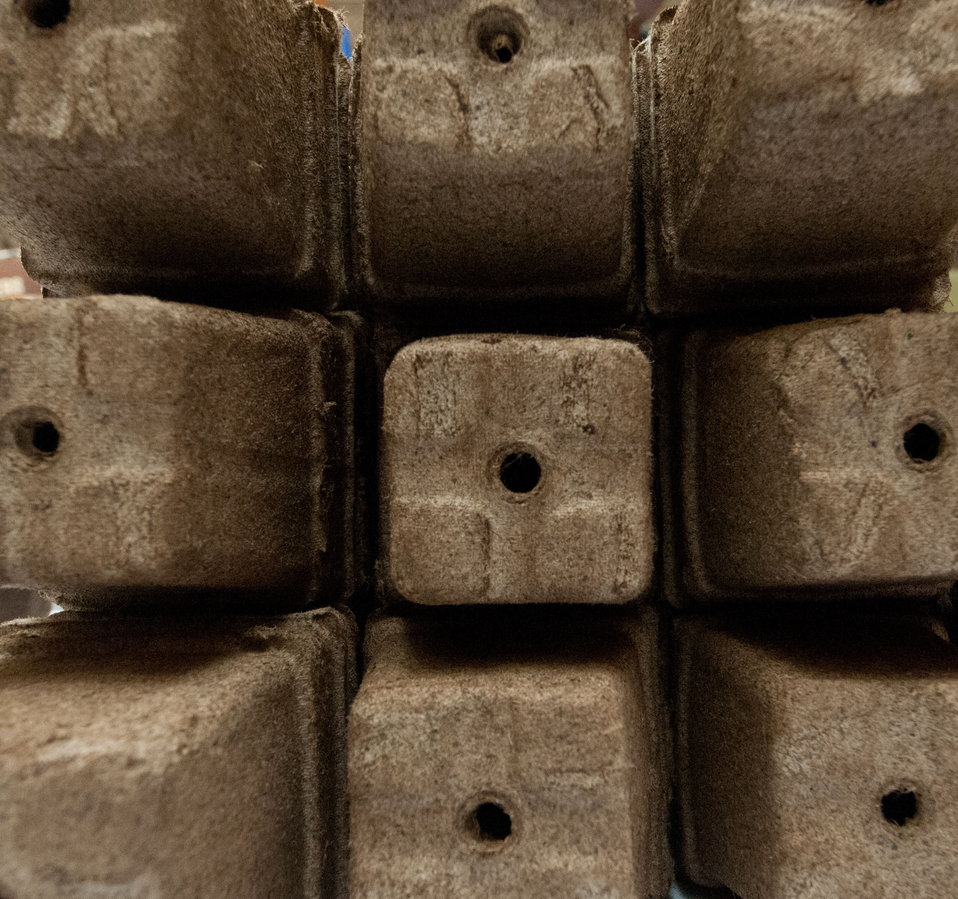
The People’s Garden Initiative and volunteer Executive Master Gardeners distributed ‘Abraham Lincoln” Tomato seedlings that the People’s Garden Initiative is distributing to USDA employees in celebration of the 150th Anniversary of the U.S. Department of Agriculture, on Tuesday, May 15, 2012 in Washington, D.C., on this day, 150 years ago, President Abraham signed the Department into existence during the Civil War. the bottom of cow manure-fiber based seed starter pots (are seen here), and all weeds, pathogens and odor are removed, and planted with the seedling. The roots will grow through the sides as it degrades and releases nitrogen into the soil, helping the plant. In 1923 the H.W. Buckbee seed company of Rockford, Illinois introduced an heirloom variety named in honor of Illinois’ Greatest Son – Abraham Lincoln. The plant produces large beefsteak tomatoes in about 90 days. Volunteer Executive Master Gardeners planted and cultivated more that 3,000 seedlings ranging in size from one inch to more than a foot tall, so people could choose the best ones to transport home and to stagger the harvest by selecting a small and large seedling. One of the hopes of this event is to share the joys of gardening and harvesting, as well as the opportunity to share your harvest in your community. Seed packets are being distributed to People’s Gardens worldwide.